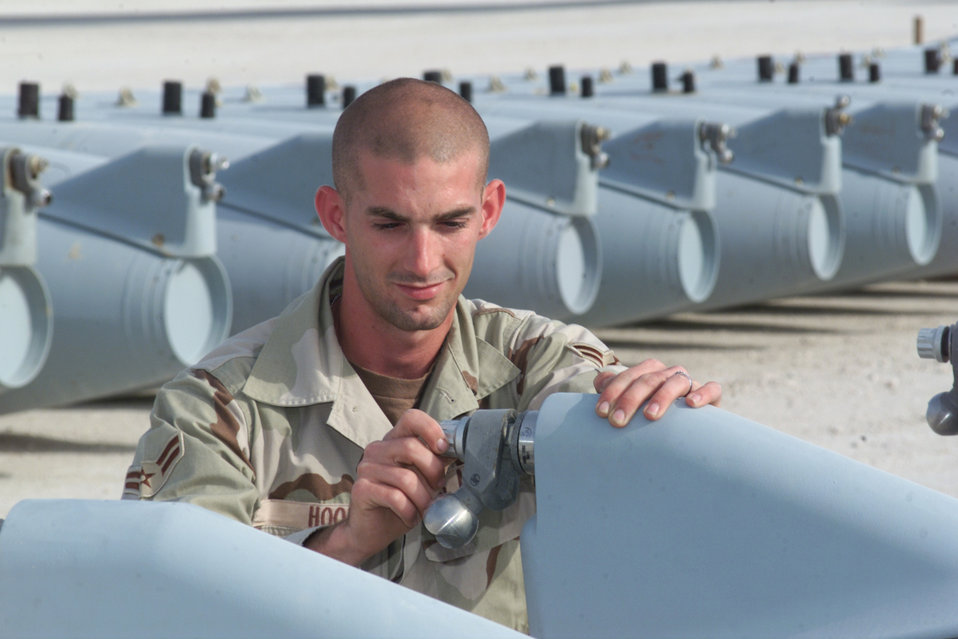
Fuels inspection

SOUTHWEST ASIA -- Airman 1st Class Jason Hook performs a daily inspection on a fuel tank. Hook is an aircraft fuels systems journeyman assigned to the 379th Expeditionary Maintenance Squadron at a forward-deployed base in Southwest Asia. Beginning May 2, the fuels career field is among the 43 officer and 56 enlisted specialties affected by Stop-Loss.